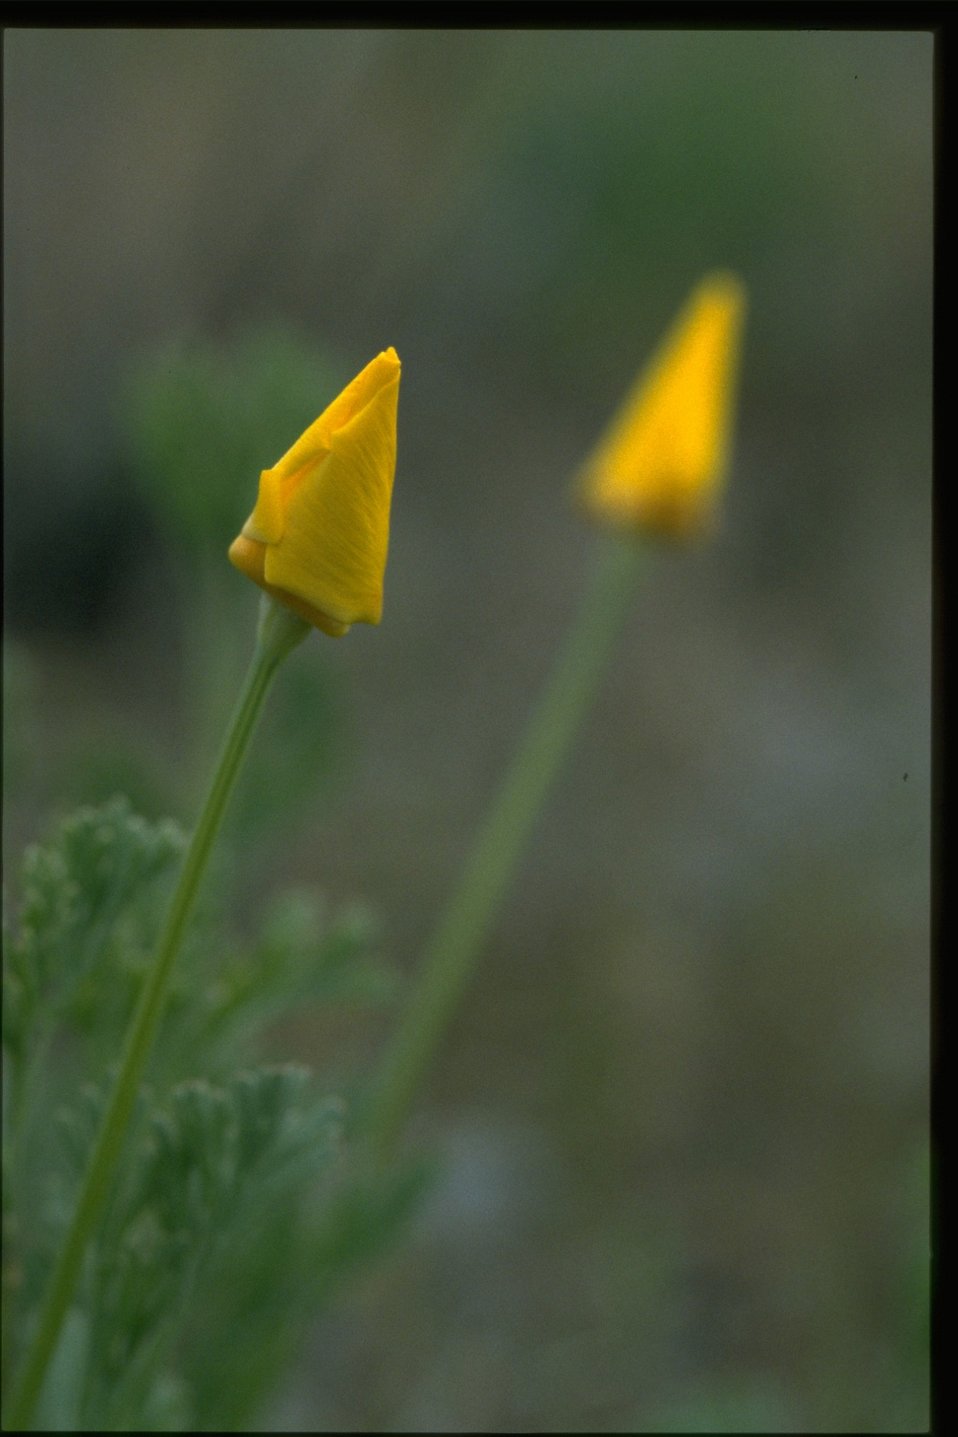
Closeup of Eschscholzia californica.